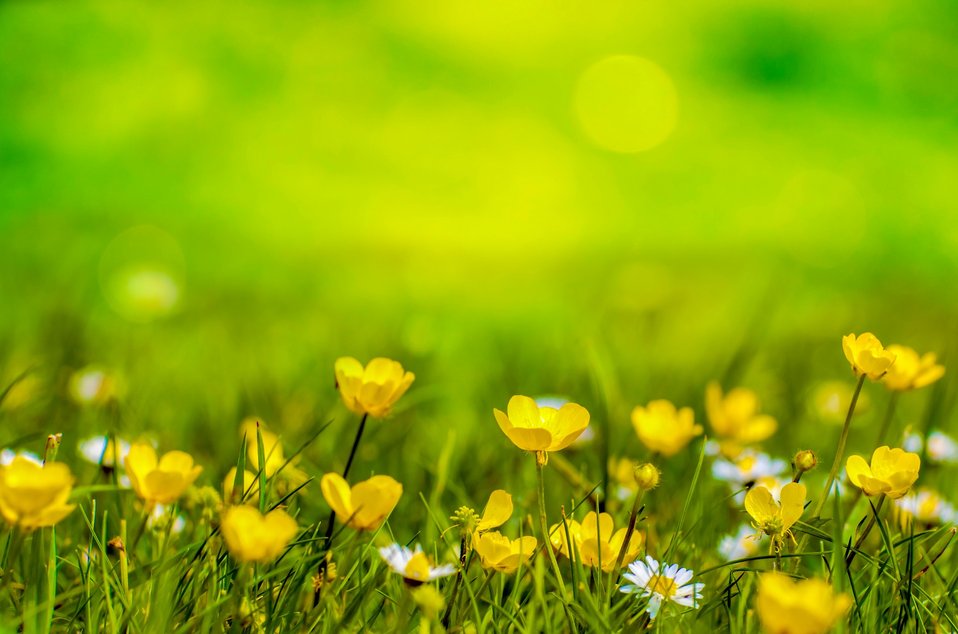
Natural backgrounds with flowers.